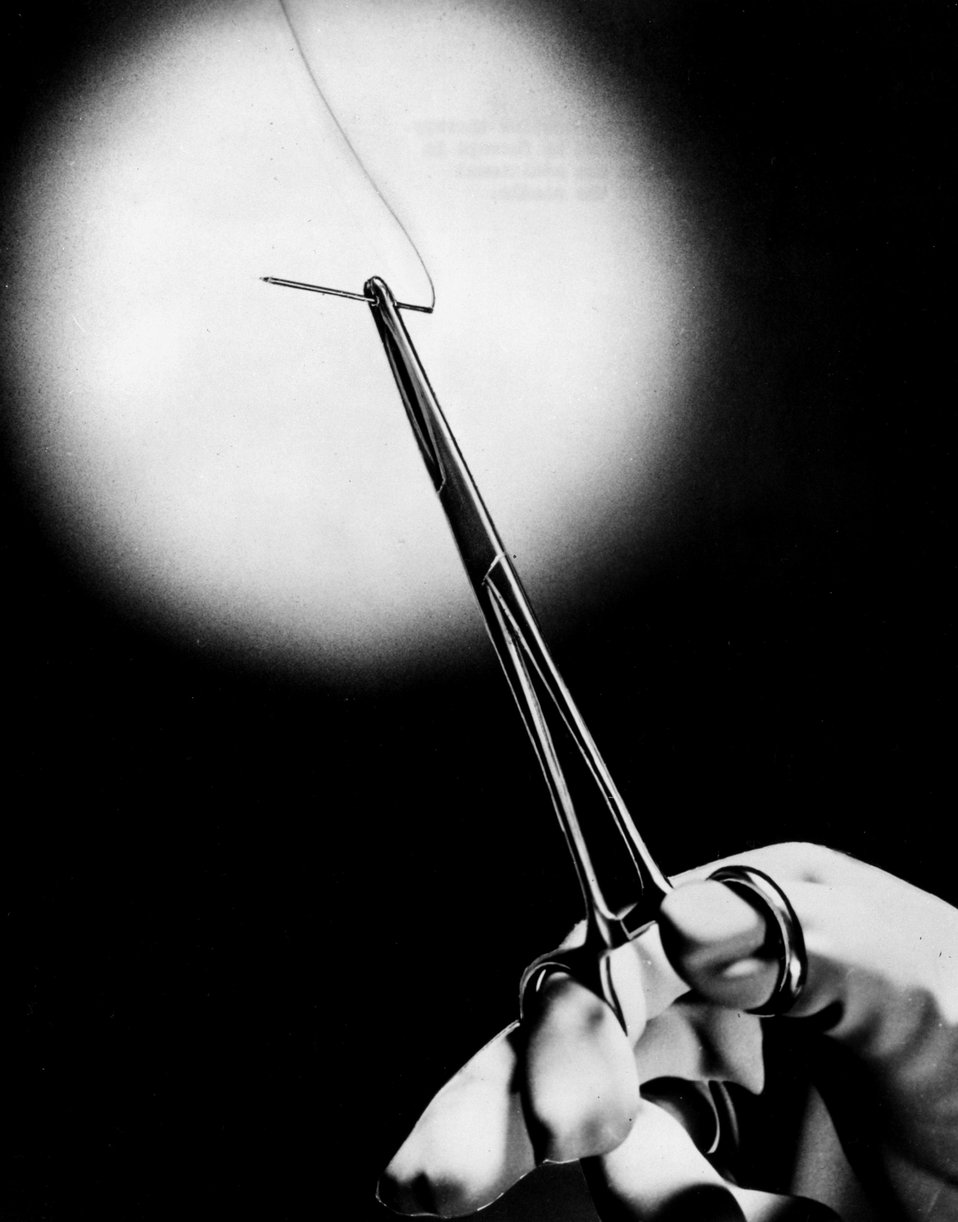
A cobalt-60 needle used in radioactive therapy. Note that the needle is handled by forceps in order to give the physician the additional protection of distance from the needle. Circa 1955.